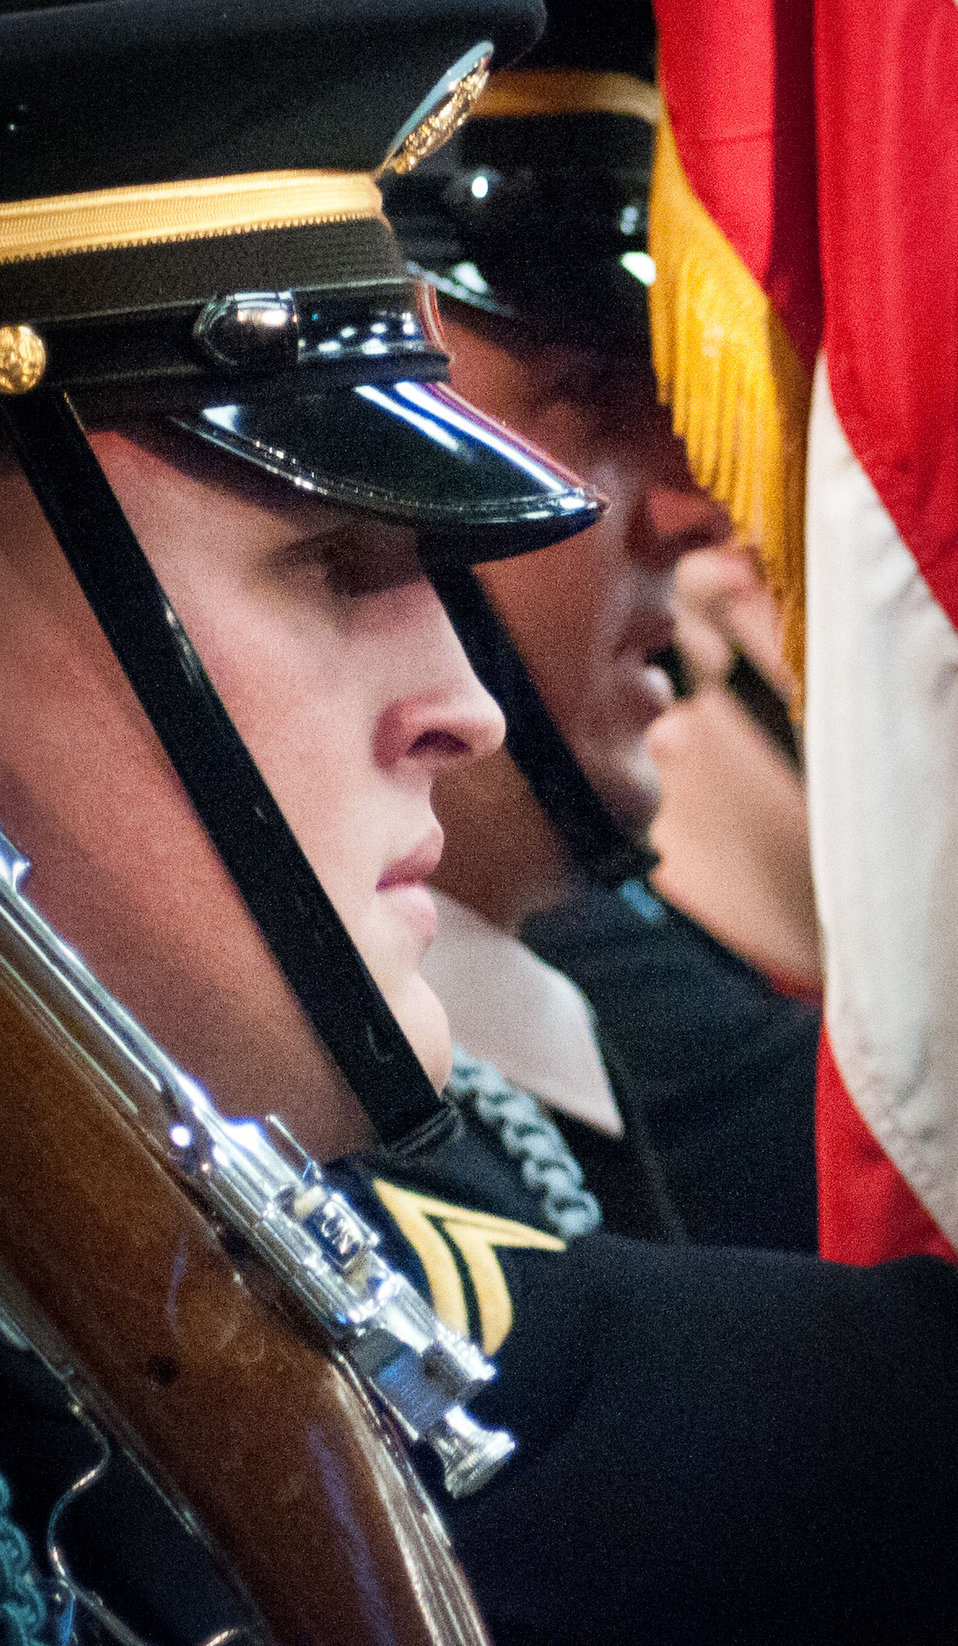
United States Department of Agriculture 63rd Secretary’s Annual Honor Awards held in the Thomas Jefferson Memorial Auditorium in Washington, D.C. on Wednesday, September 14, 2011. The Armed Forces Color Guard presented the colors and the “National Anthem.” Deputy Assistant Secretary for Administration Oscar Gonzales led the Pledge of Allegiance. Deputy Secretary of Agriculture Kathleen Merrigan provided opening remarks and introduction of Agriculture Secretary Tomas J. Vilsack.